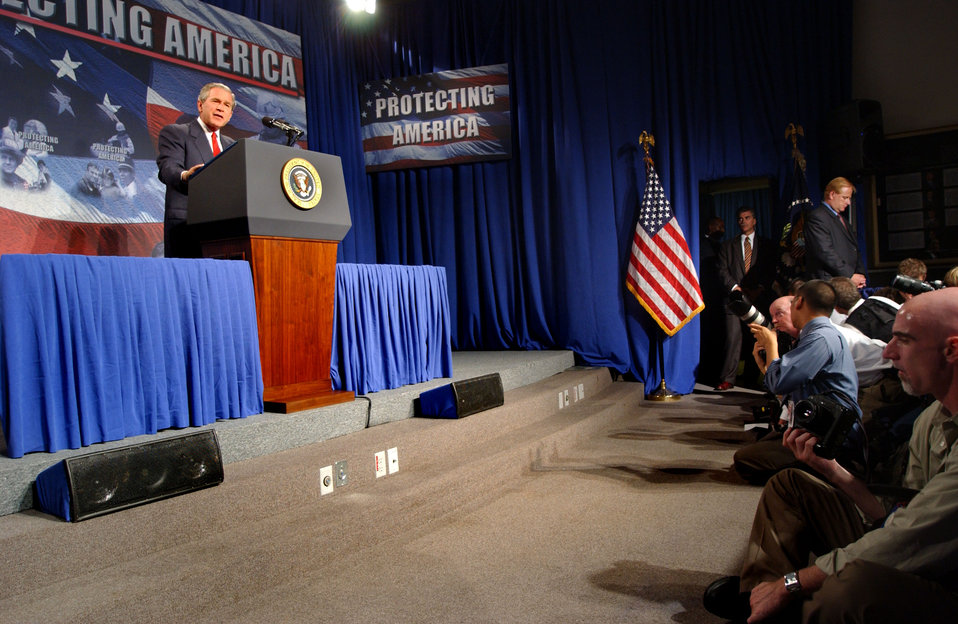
President George W. Bush visit to Oak Ridge

04-164-0210 DOE photo by Lynn Freeny President George W. Bush visit to Oak Ridge National Lab 7-12-2004